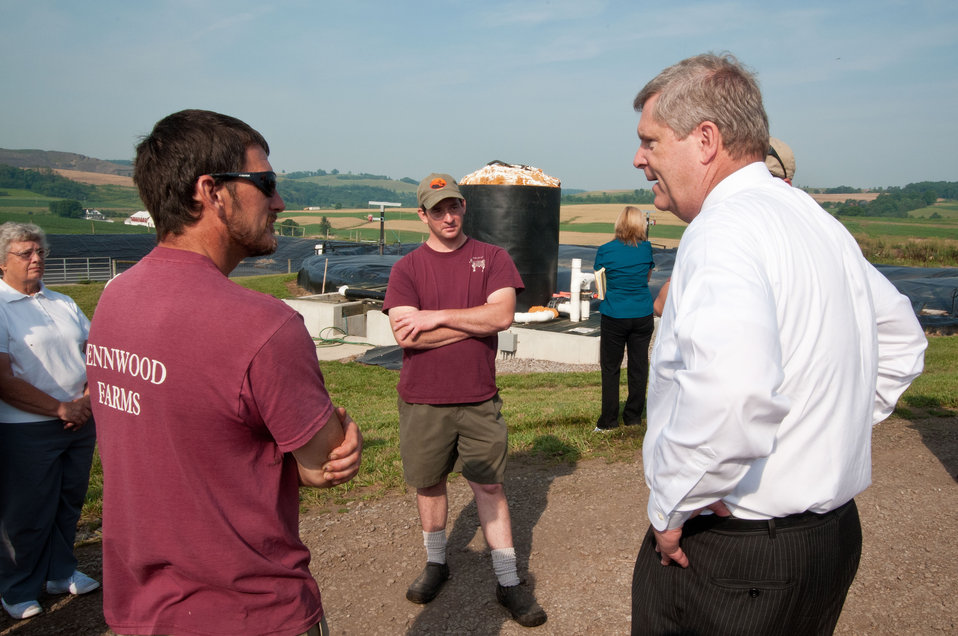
From left: Glenn Stoltzfus, Agriculture Secretary Tom Vilsack and Duane Stoltzfus discuss the operation of the anaerobic digester on their Pennwood Dairy Farms in Berlin, PA to produce energy to operate the farm on Tuesday, July 17, 2012. The digester produces one million kilowatt hours; half of the energy needs of the farm, the other five hundred thousand kilowatt hours are sold back to the grid. An anaerobic digester is a component of a waste management system that provides biological treatment in the absence of oxygen. The digester captures biogas for energy production, manages odors, reduces the net effect of greenhouse gas emissions, and reduces pathogens. The anaerobic digester practice is part of a planned conservation management system that manages manure and/or comprehensive nutrient management system.